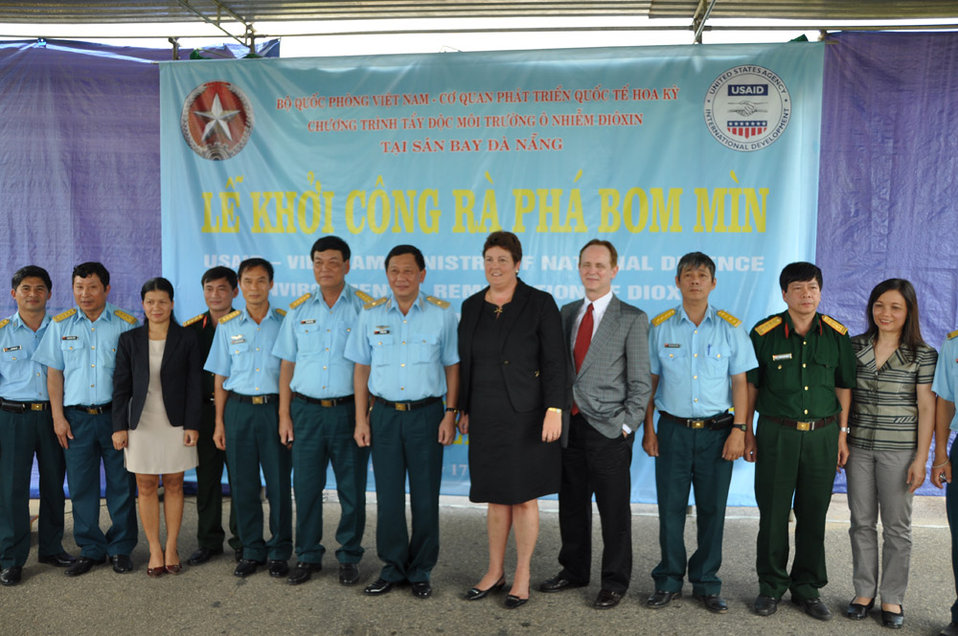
UXO clearance ceremony, June 17, 2011, in Danang, Vietnam.